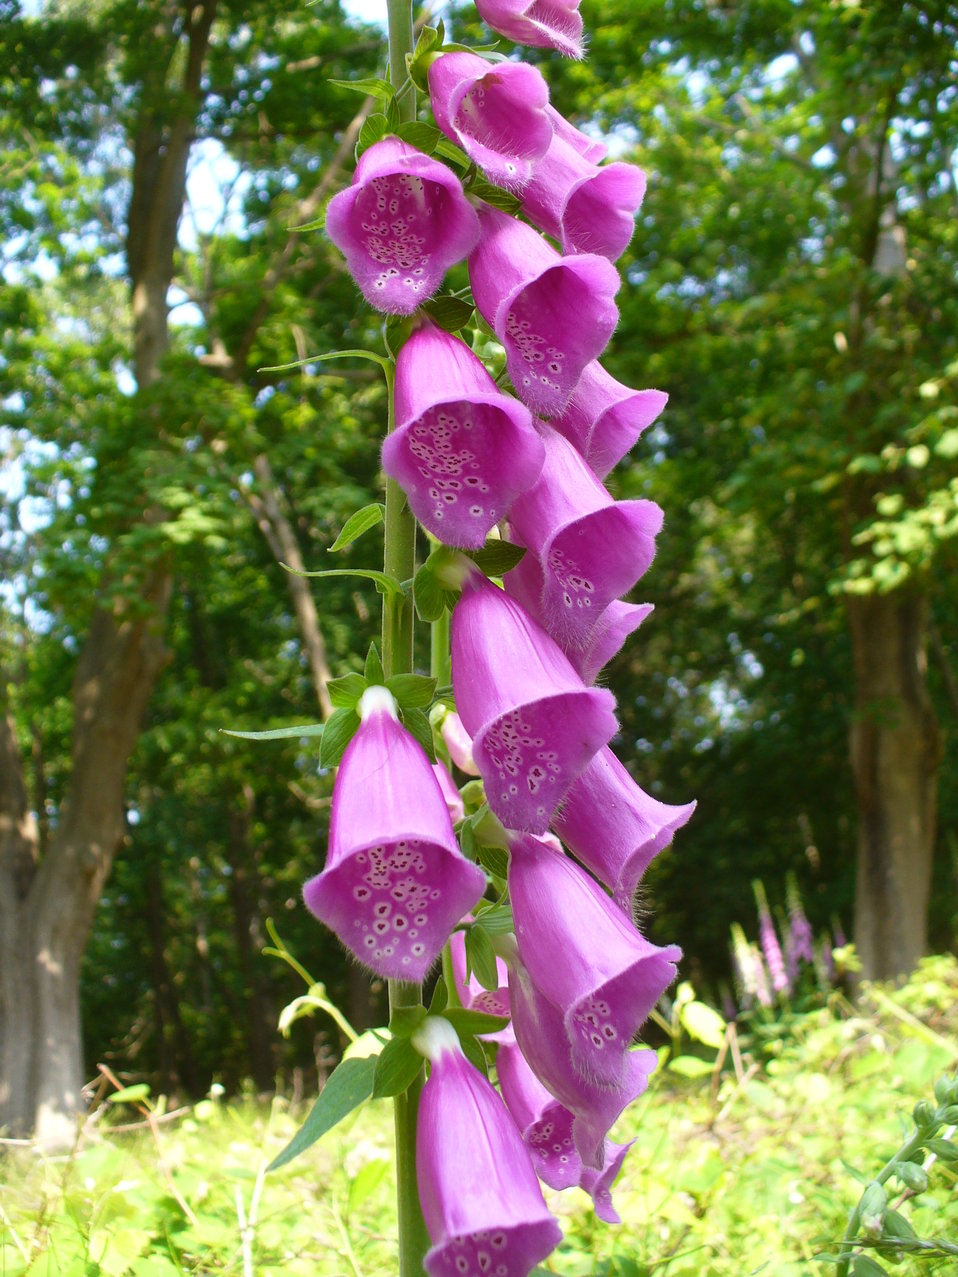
Purple foxglove

Invasive purple foxglove at Seatuck National Wildlife Refuge, NY.